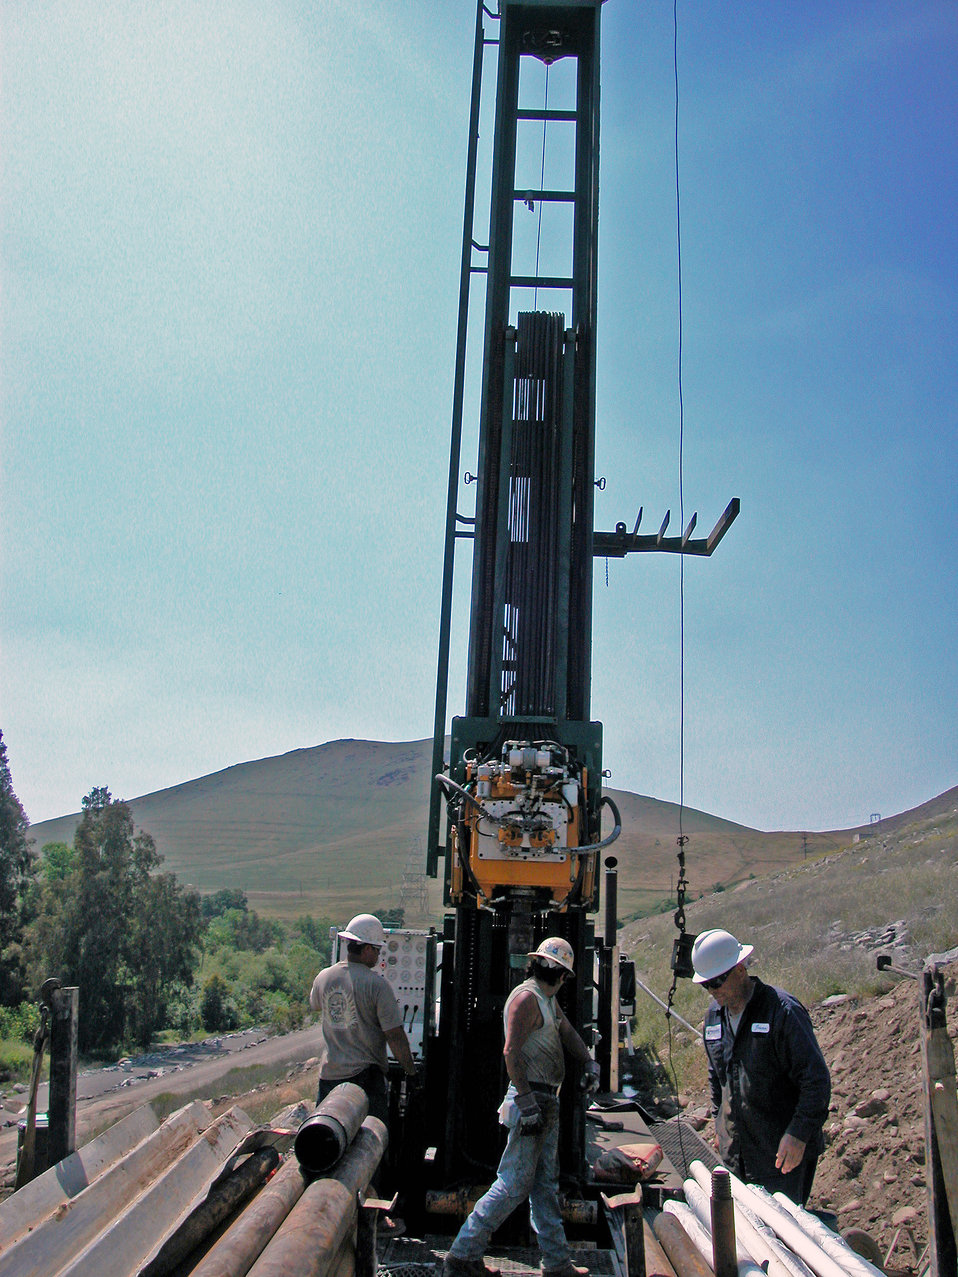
Corps drills borehole test sites at Success Dam

Contractors with the U.S. Army Corps of Engineers Sacramento District use a sonic drill rig to dig borehole test sites May 2, 2006, at Success Dam near Porterville, Calif. The boreholes are used to evaluate the earthen structure and stability of soil and rock underneath the dam during the Corps’ Success Dam Safety Modification Study.